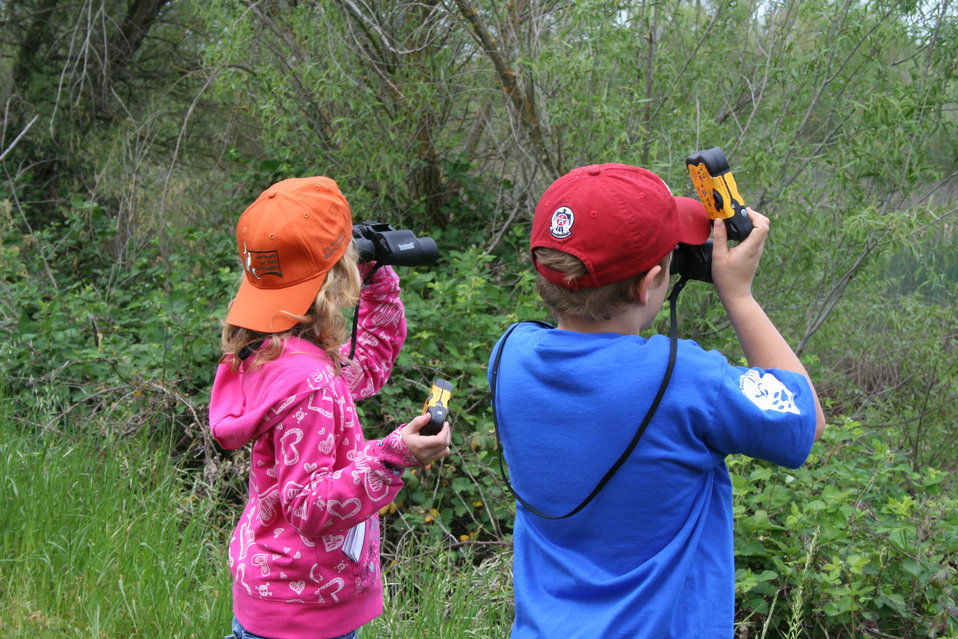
Children at Stone Lakes NWR

Connecting people to the outdoors is an important part of what we do in the Pacific Southwest Region.